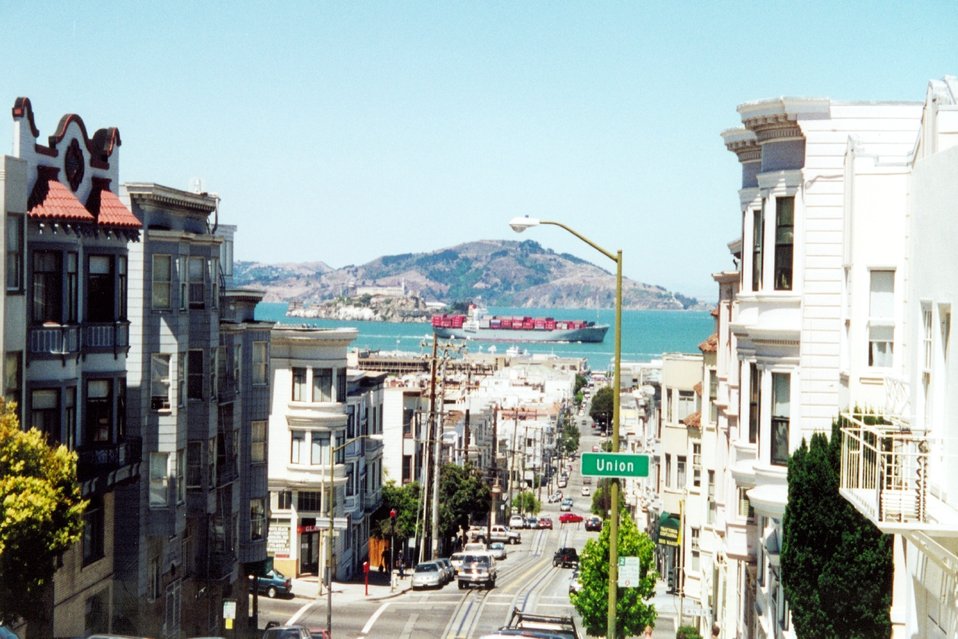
Looking towards Alcatraz from a fabled San Francisco hill.